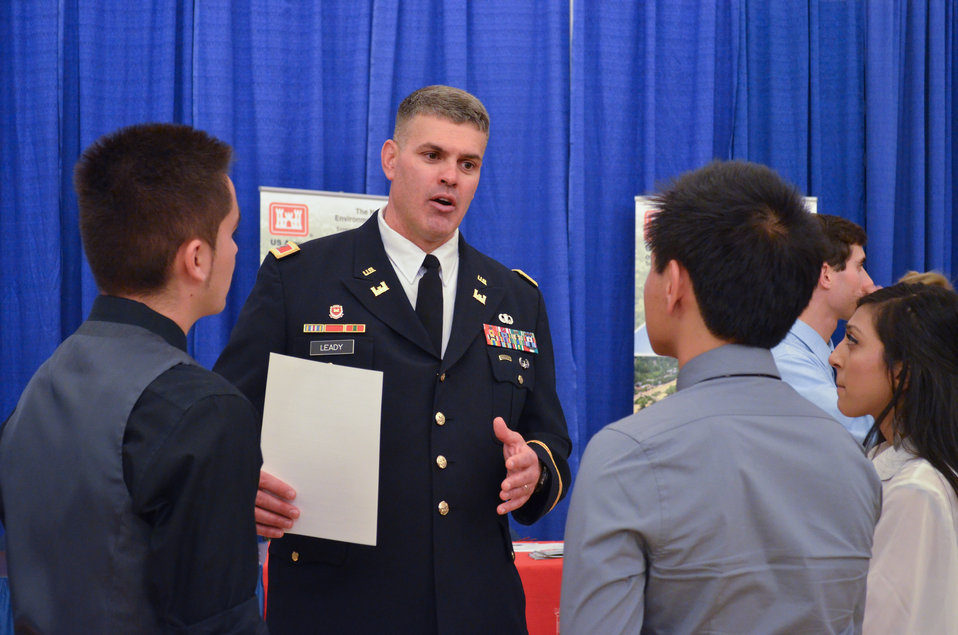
District leaders discuss career, internship opportunities at UC Davis Night with Industry

U.S. Army Corps of Engineers Sacramento District’s commander Col. Bill Leady and Linda Finley, programs and project support branch chief, speak to attendees at Night with Industry 2012, a networking event at the University of California – Davis in Davis, Calif., Nov. 1, 2012. The event allowed engineering students to discuss career and internship opportunities with industry leaders.